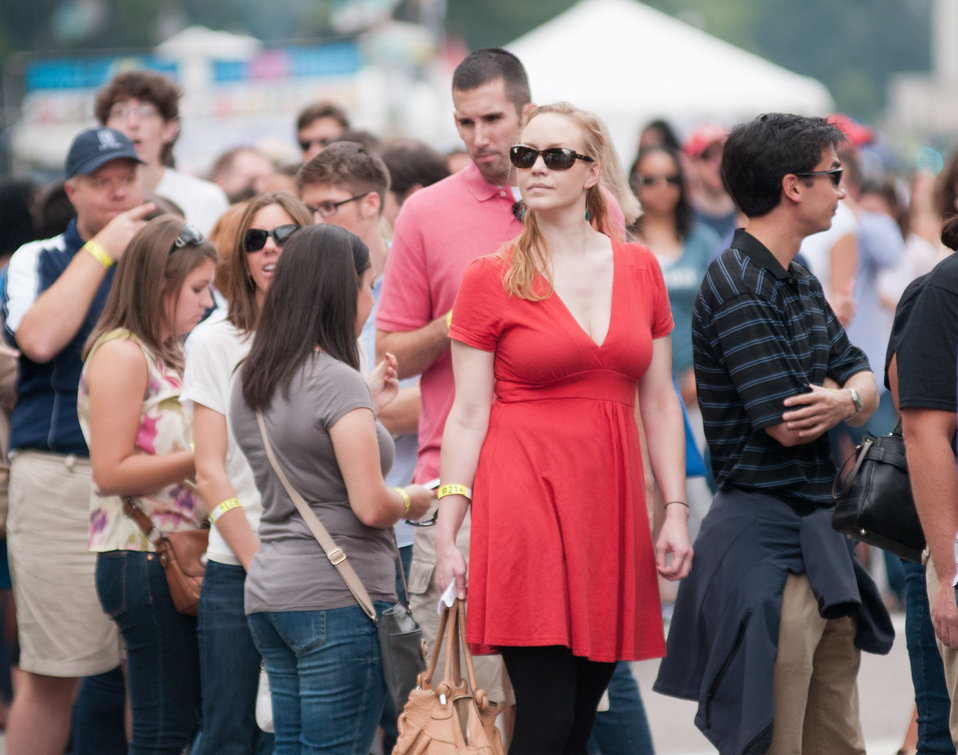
Lines formed quickly during the opening of the The Taste of D.C., event highlights more than 70 eateries, 30 specialty beer providers, the United Service Organization (USO) Metropolitan Washington, and live bands. It is anticipated that more than 500,000 people will attend over the course of the three-day event, which extends from the White House to the Capitol, along Pennsylvania Ave. in Washington D.C. on Saturday, October 6, 2012. Agriculture Food Safety and Inspection Service specialists present talks and cooking demonstrations. Agriculture’s mobile Discovery Zone is on hand to educate children and parents about the four main principals of food safety – clean, separate, cook and chill.